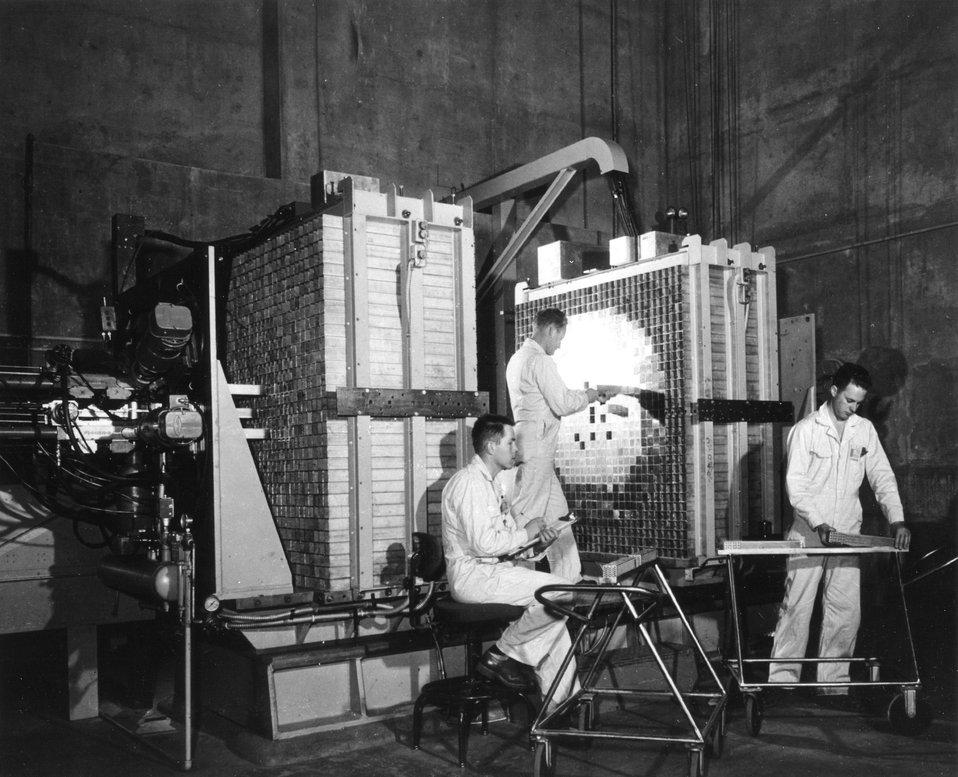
the ZPR III machine is made in halves to permit various fuel loading without dangers of criticality. Trays are filled with fissionable material and other metals to permit simulation of various reactor types and configurations. c. 1956